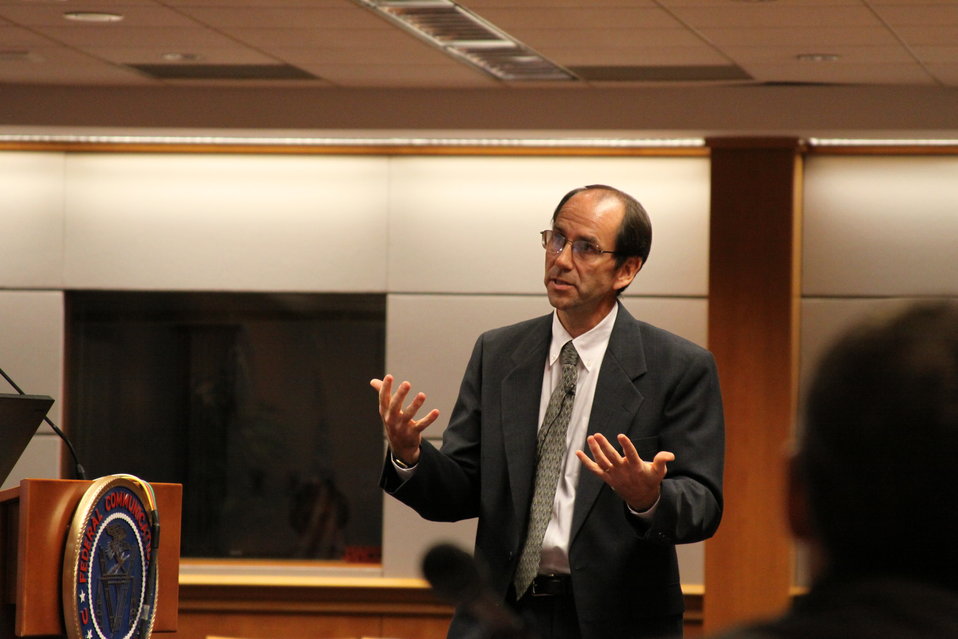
First Open Internet Workshop 12-8-09